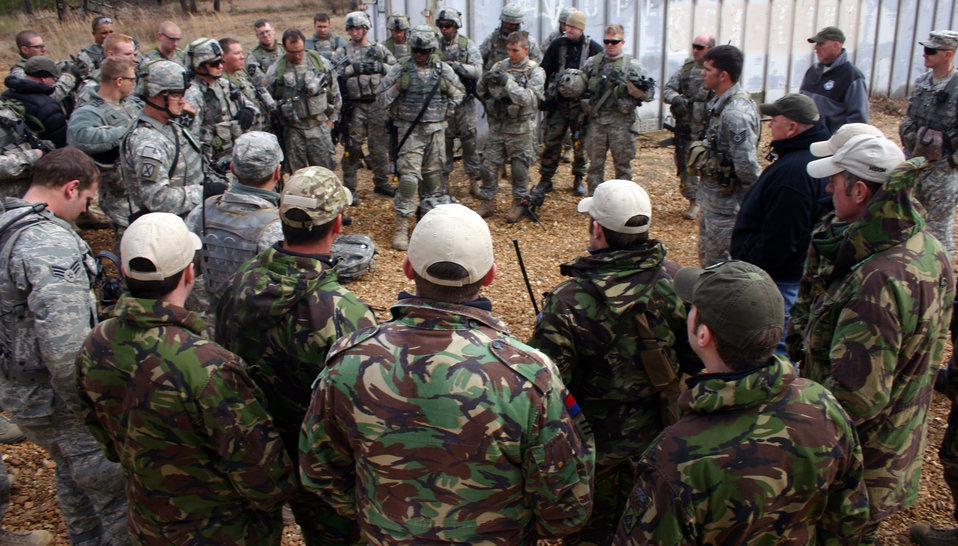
American, British forces hone warfighting skills together

American Airmen and British joint terminal attack controllers and U.S. Army joint fires observers conduct an after action report at the Joint Readiness Center in Fort Polk, La.